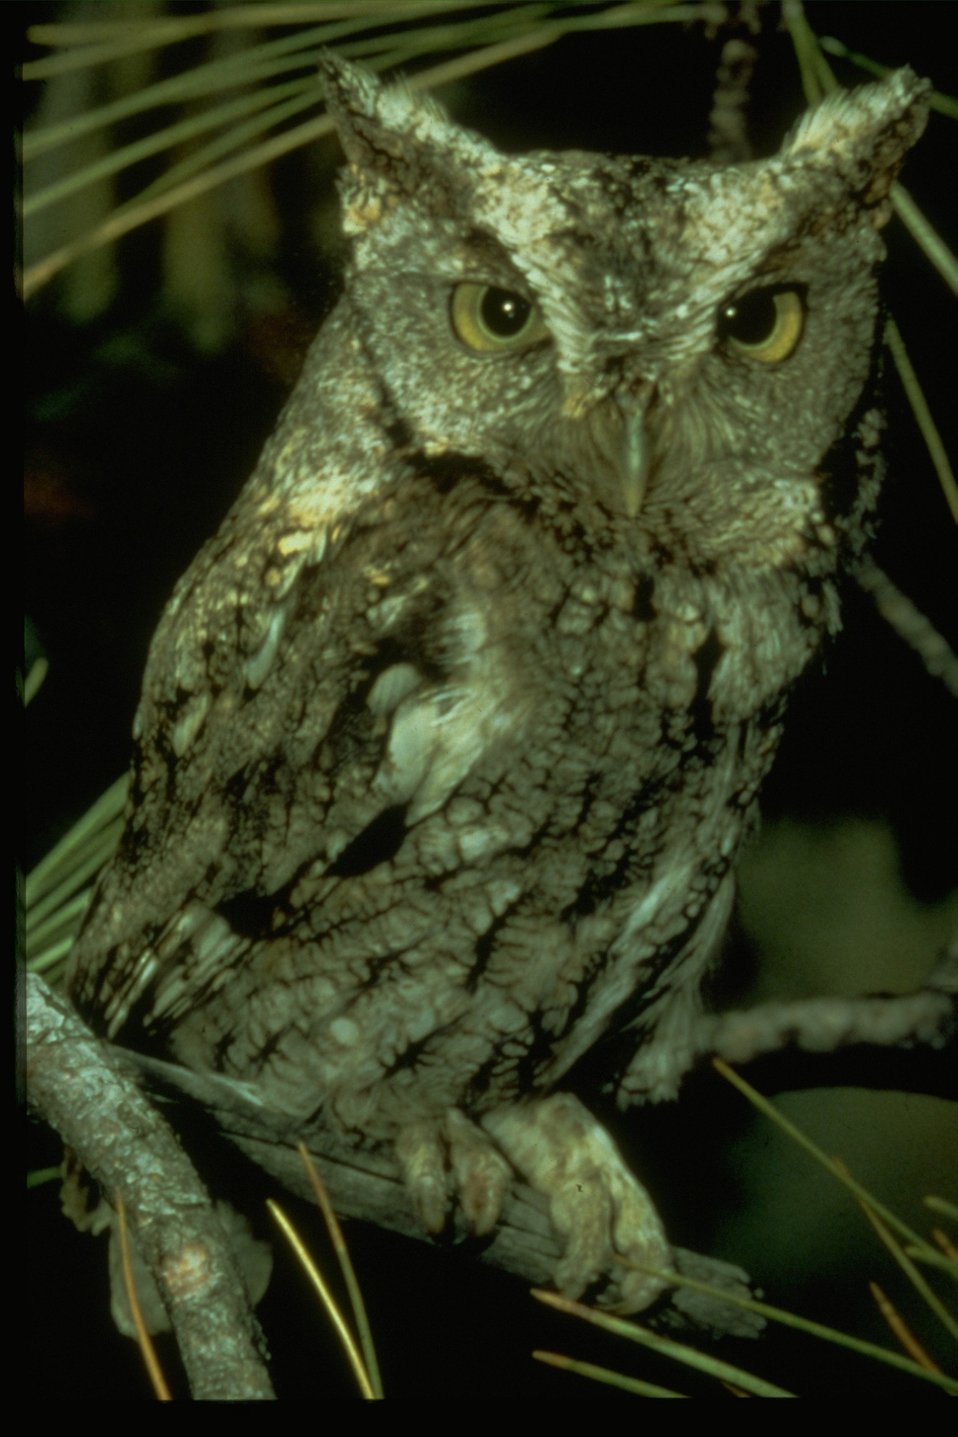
Screech Owl